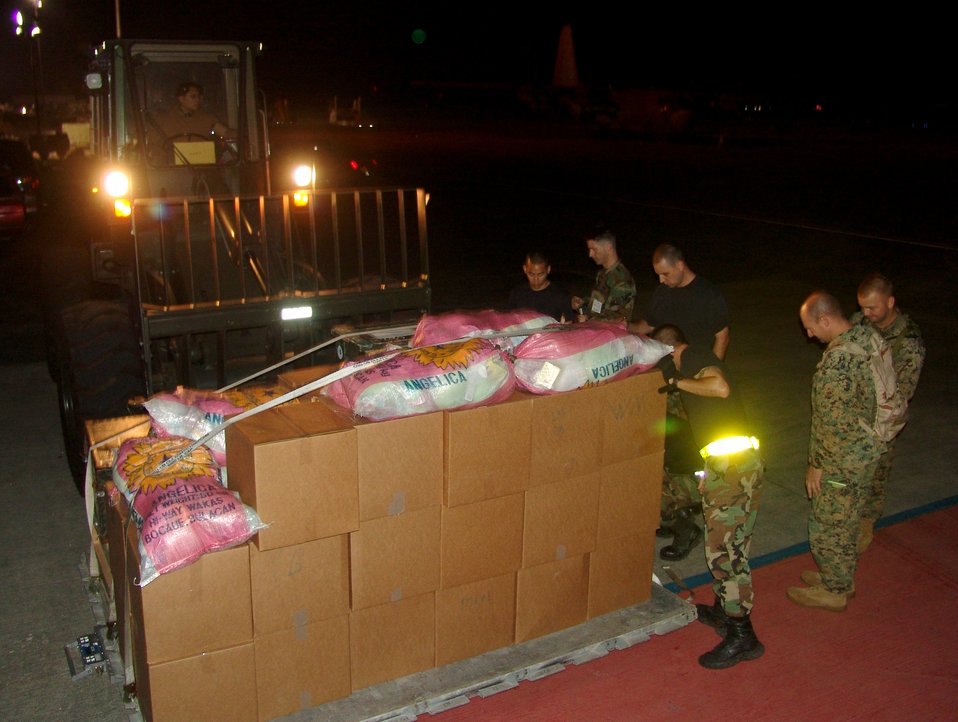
Philippine landslide relief

CLARK AIR BASE, Philippines (AFPN) -- Airmen and Marines prepare 3,000 pounds of clothes, rice and hygiene items onto CH-46E Sea Knight helicopters at Clark Air Base, Feb. 17. The relief supplies are being flown to the USS Essex where they will be transported to St. Bernard, Philippines, for distribution to survivors of the Feb. 17 landslides.